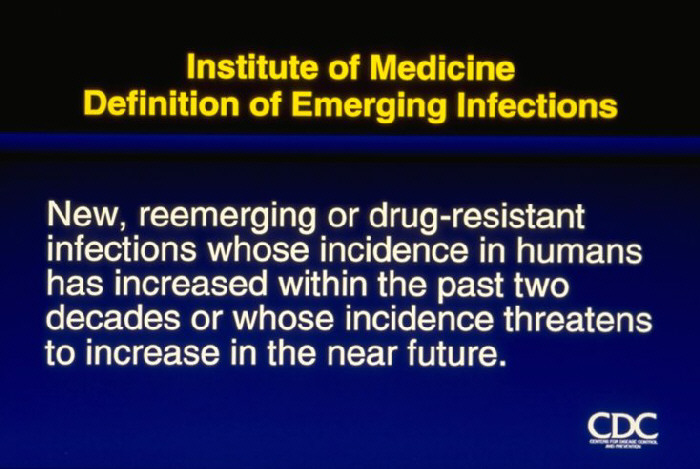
Definition of Emerging Infections by Institute of Medicine.